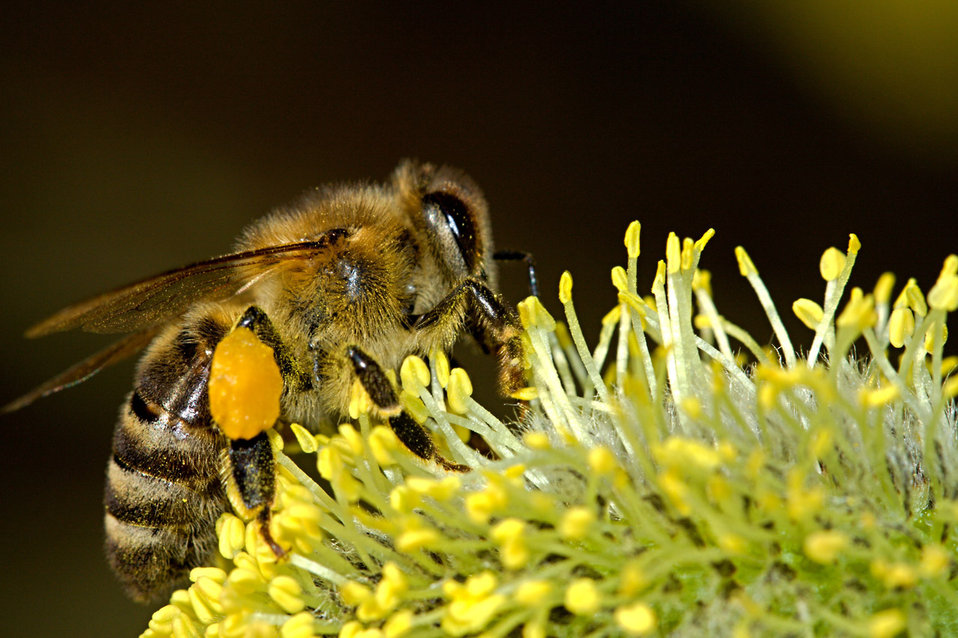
Bees are hard working.